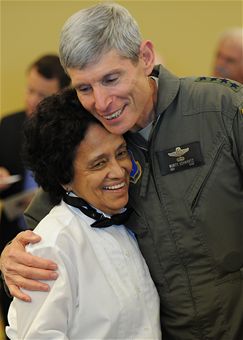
CSAF fini flight at Hurlburt Field Fla.

Air Force Chief of Staff Gen. Norton Schwartz hugs a member of the Soundside Club staff at Hurlburt Field, Fla., July 12, 2012. Schwartz visited the base to meet with Air Force Special Operations Command leaders and airmen. During the visit, he flew his last flight as an active-duty officer on an MC-130E Combat Talon I. The MC-130E crew conducted a local training sortie during the mission. It also served as Schwartz's